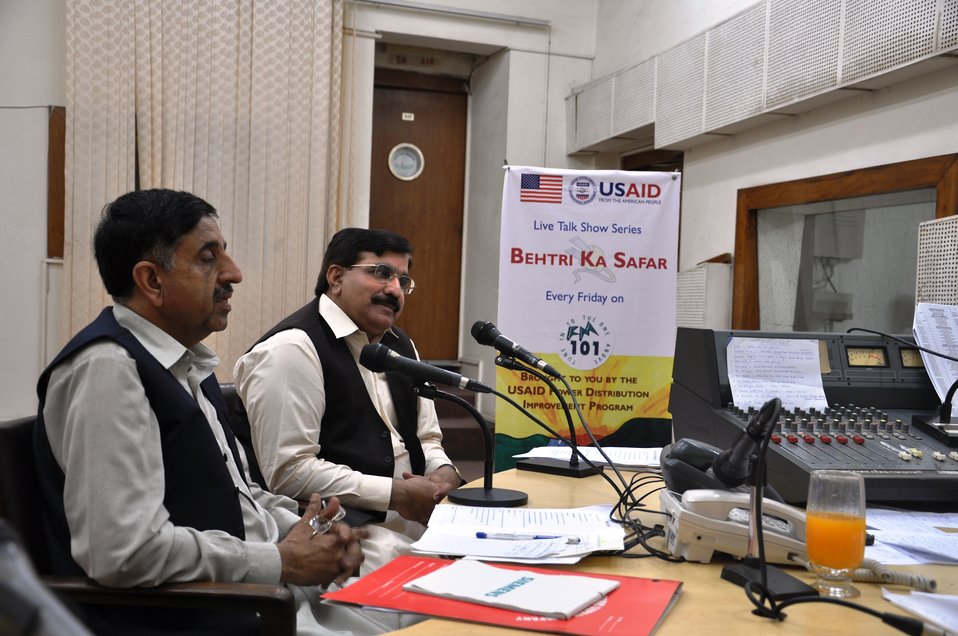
7 Oct, 2011 - Live Talk Show Series Every Friday 'Behtari Ka Safar' on FM 101

The commercial and operations managers of Islamabad Electric Supply Company (IESCO) participated in episode 04 to promote the image of I ESCO to its consumers and general public. There were questions on new connections, bill corrections, payments, theft and range of services available at the IESCO’s customer service centers. IESCO is one of the best performing utility in Pakistan.